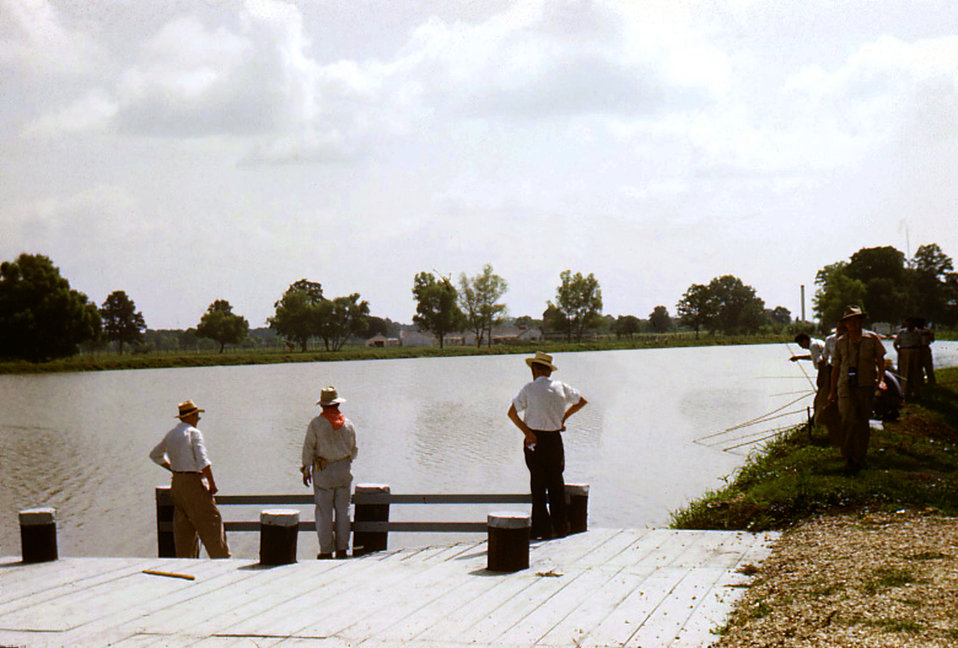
This historic image depicted a number of Carville, Louisiana Leprosarium patients as they were enjoying their usual Sunday outdoors fishing on Lake Johansen from a dock, which was constructed primarily to facilitate those wishing to partake in boating trips. Lake Johansen was named after one of the Leprosarium's Chief Medical Ofiicers, Dr. Frederick A. Johansen. Making use of this beautiful lake was routine, and included activities such as swimming, boating, and pictured here, fishing.The National Hansen's Disease Museum's (NHDM) mission is to collect, preserve and interpret the medical and cultural artifacts of the Carville Historic District. In addition, we want to promote the understanding, identification, and treatment of Hansen's Disease (leprosy). We fulfill this mission by creating and maintaining museum displays, traveling exhibits, publications and a website in order to educate and inform the public on all levels.